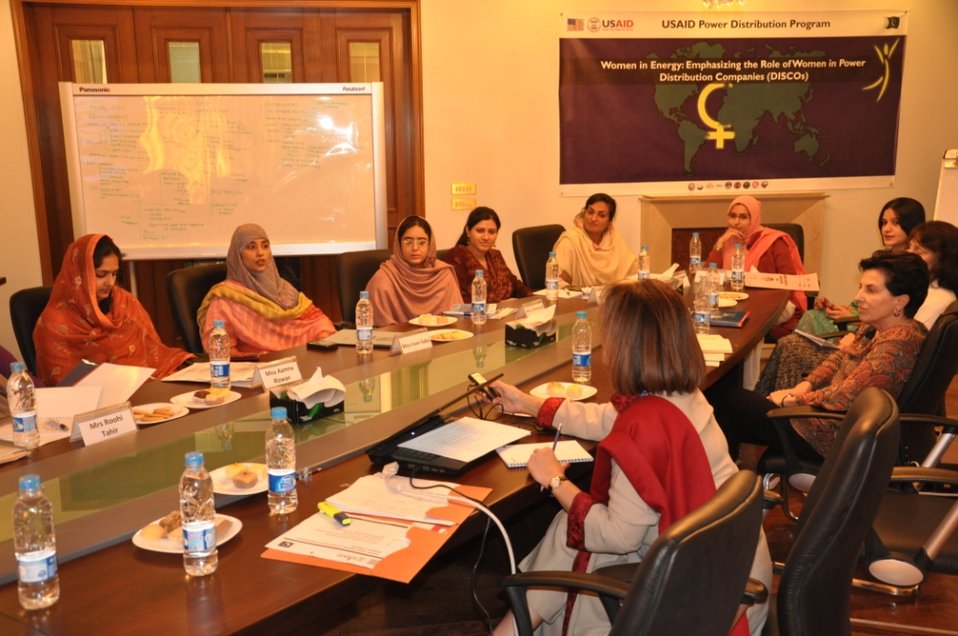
DISCOs Gender Consultation Meeting at USAID Power Distribution Program Office Islamabad

Islamabad, November 29, 2011 - 11 dynamic women, representing 7 power distribution companies (DISCOs) met in a unique session, organized by USAID Power Distribution Program. A comfortable working environment for women at work place means better productivity for the company.